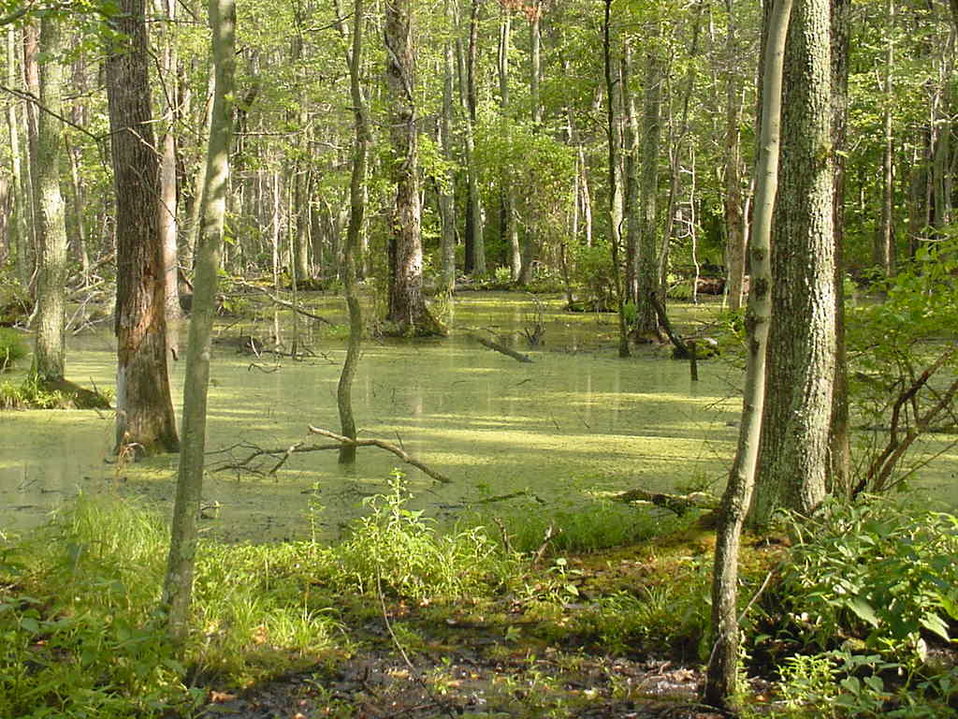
Blackwater National Wildlife Refuge - flooded woods